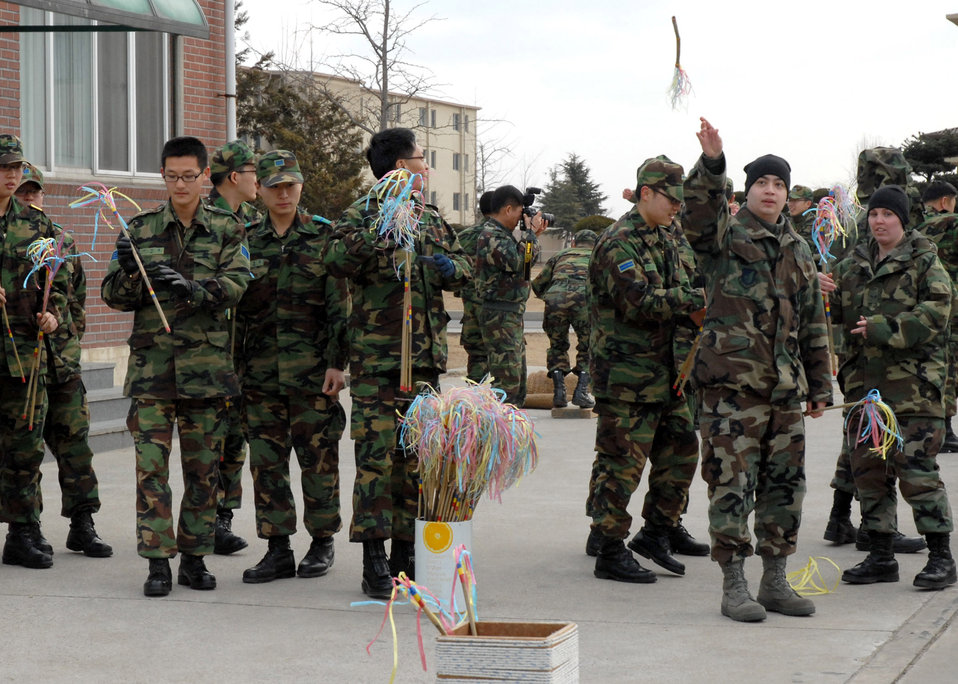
Lunar New Year event strengthens ties, cultural awareness

Members of the South Korea air force, 38th Fighter Group and U.S. Air Force members with the 8th Fighter Wing play a bow throwing game Feb. 7 at Kunsan AB, South Korea. The festivities marked a Lunar New Year event hosted by the South Korea air force members to strengthen ties and gain cultural awareness with U.S. military members.